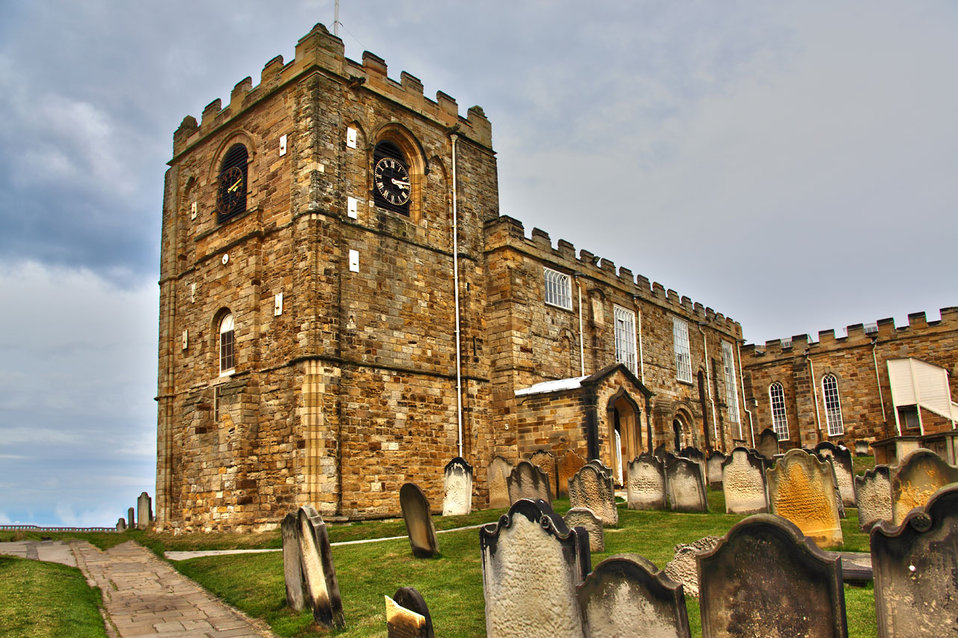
Old stone church

An old stone church with gravestones in the foreground in whitby.